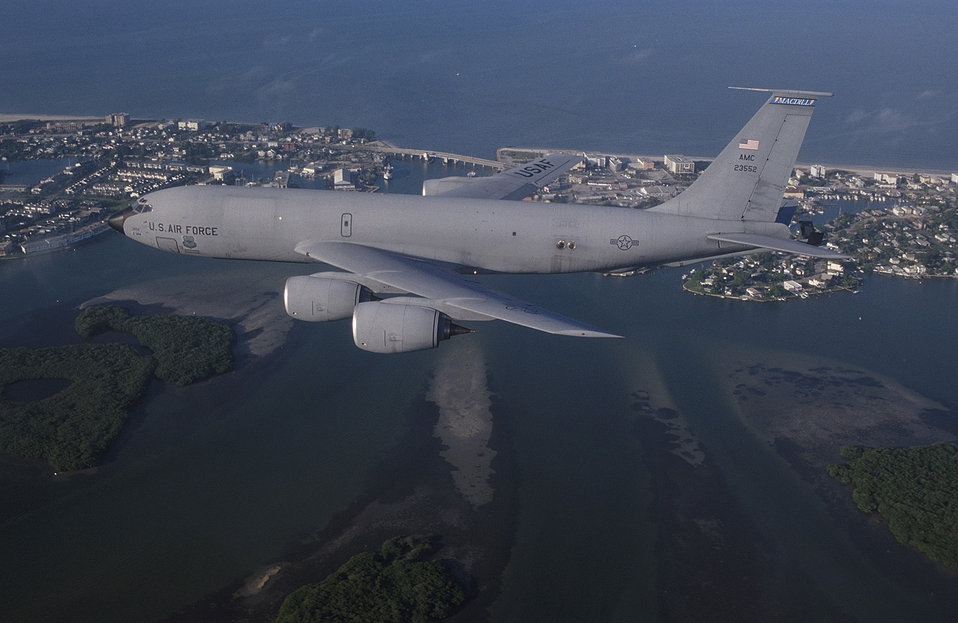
Training mission

FILE PHOTO -- A KC-135R Stratotanker flies a training mission. The KC-135's principal mission is air refueling. This asset greatly enhances the U. S. Air Force's capability to accomplish its mission of Global Engagement. It also provides aerial refueling support to U.S. Navy, U.S. Marine Corps and allied aircraft.